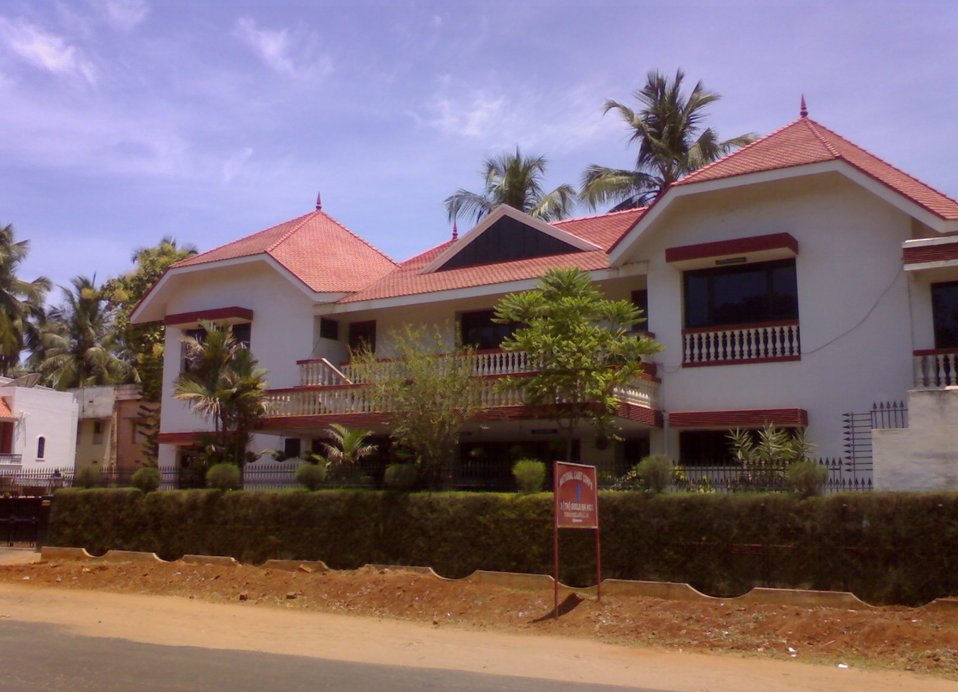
A house in palayamkottai